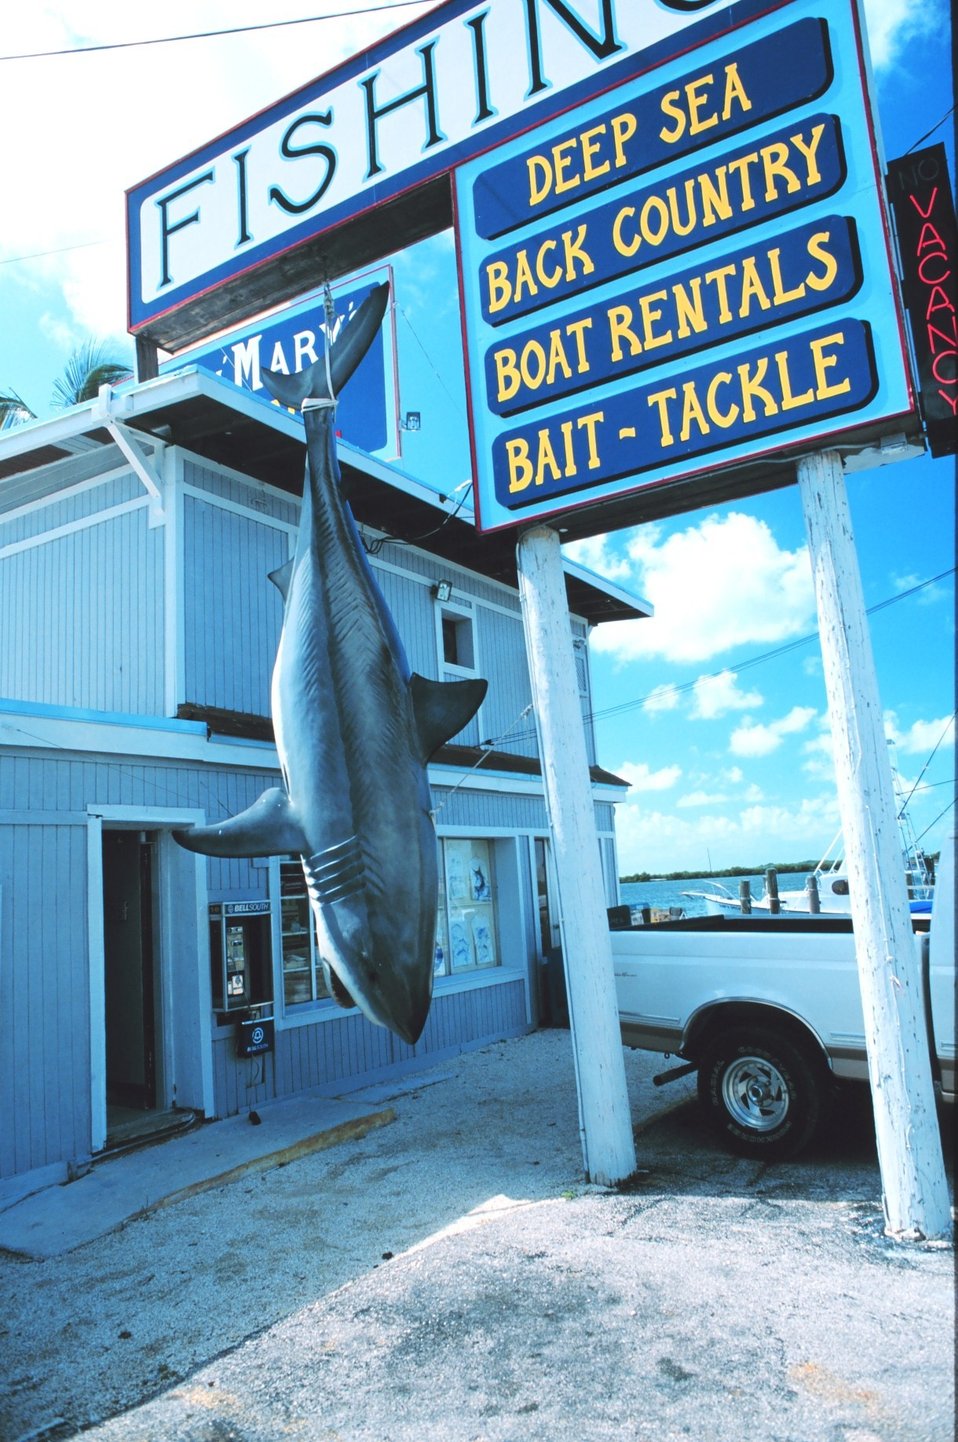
Fish art